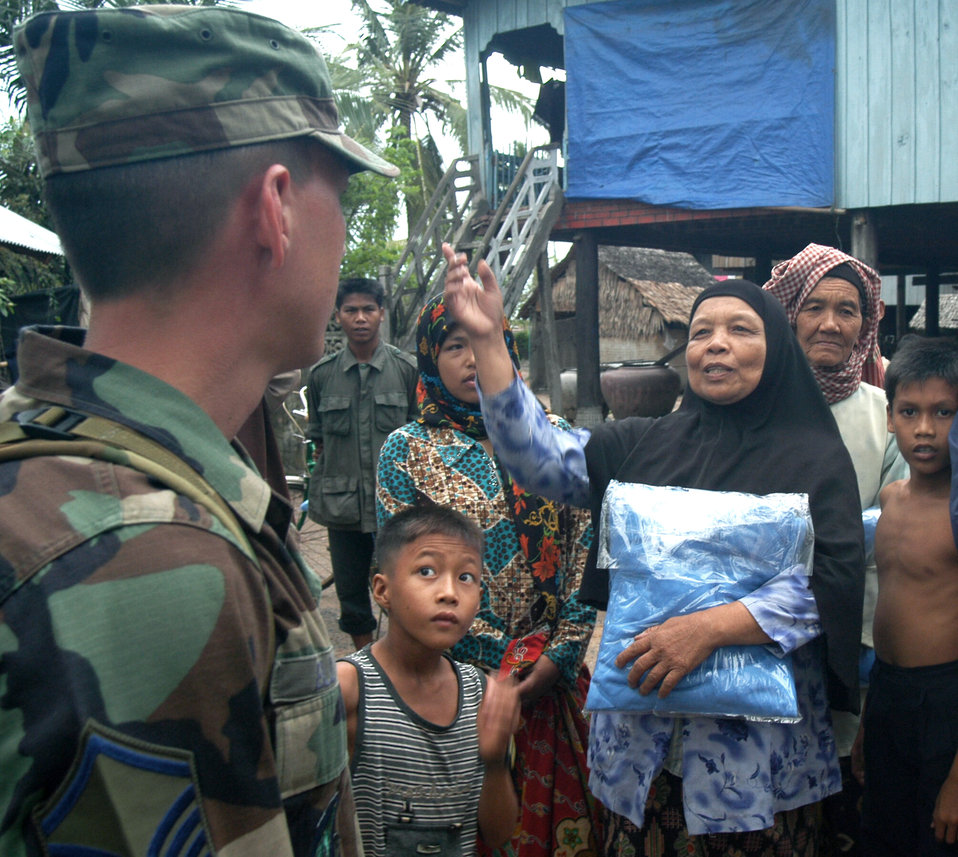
Gift of health

KEP, Cambodia -- Master Sgt. Dan Elliott talks with a Cham-Muslim woman in a village near here May 17 after handing out mosquito nets. Sergeant Elliott is the noncommissioned officer in charge of a 20-person blast resuscitation and victim assistance team on a two-week humanitarian mission. Sergeant Elliott is assigned to Detachment 2 of the 13th Air Force international health specialist program at Hickam Air Force Base, Hawaii.